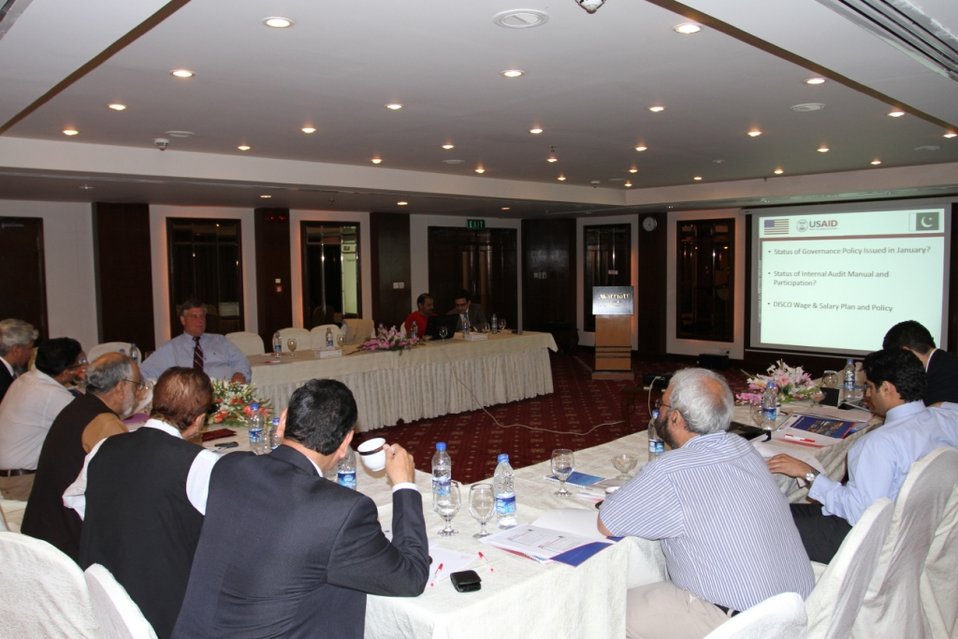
Chairman Board Meeting

Islamabad, May 3, 2012: Chairmen Board of Directors of DISCOs met with Mr. Robert Kolling, Advisor to the Ministry of Water and Power to discuss Board policies and procedures.